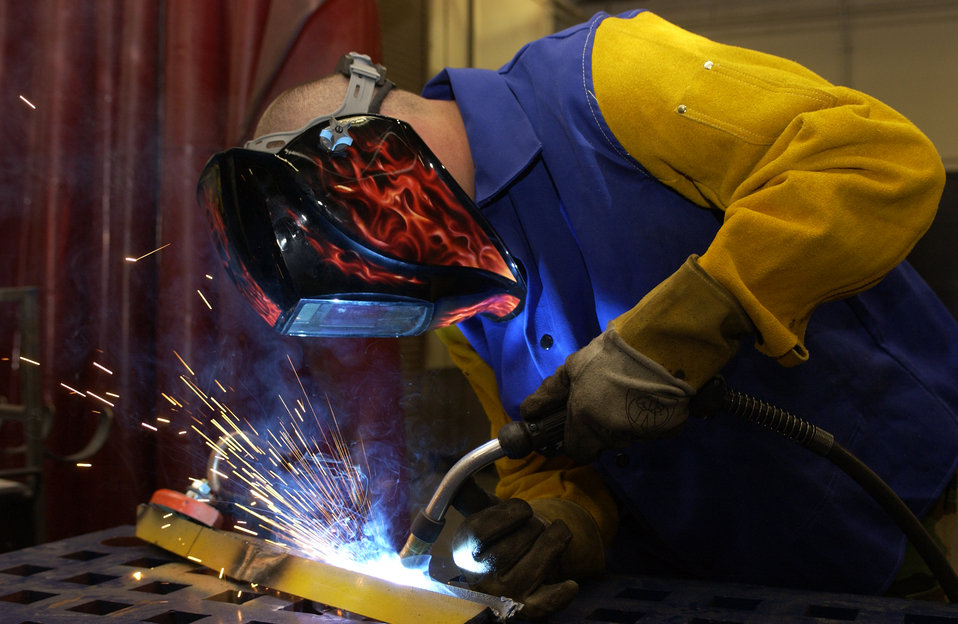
Fire in his eyes

Staff Sgt. Jason Disbrow welds a ladder from an aerial ground equipment stand at the fabrication shop Nov. 7, at Nellis Air Force Base, Nev. Sergeant Disbrow is an aircraft metals technology craftsman with the 57th Equipment Maintenance Squadron.